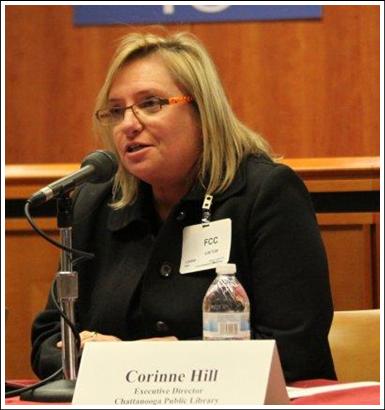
Corinne Hill

Panel 3: Discussion of Best Practices Learned from Implementing Broadband Adoption Programs Within Different Communities